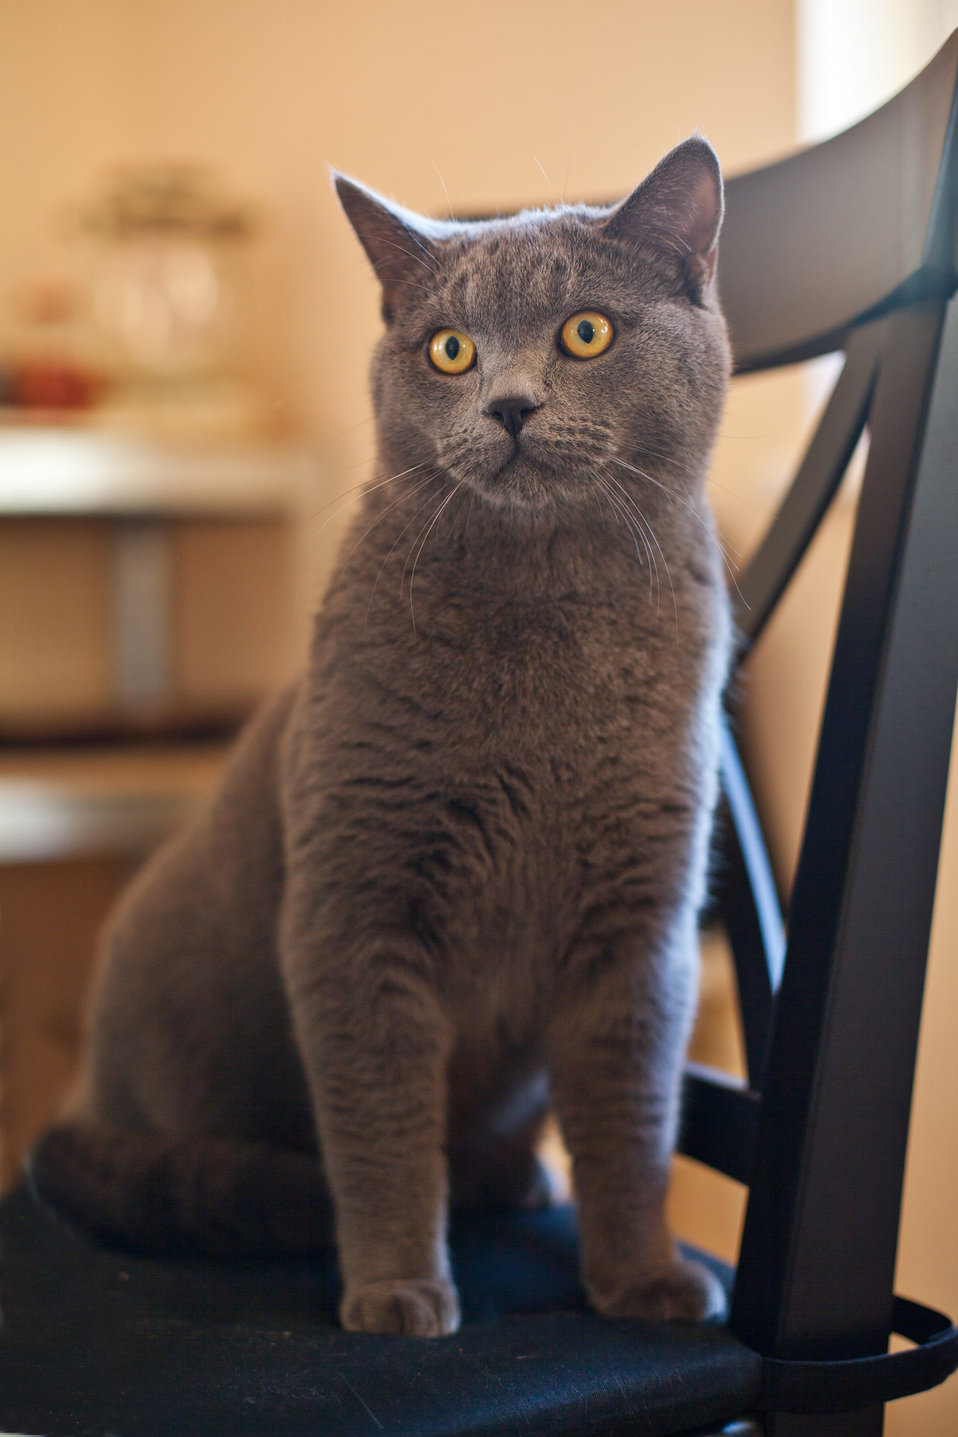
Cat

Gray cat with yellow eyes.